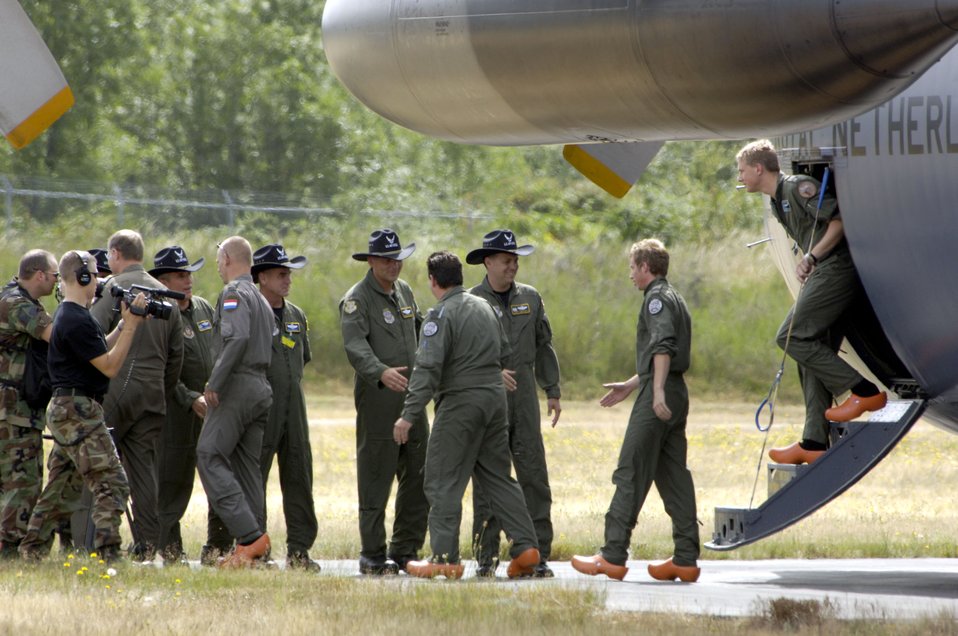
Rodeo 2007 officials welcome the team from the Netherlands' to McChord Air Force Base, Wash., July 16. Rodeo 2007, hosted by Air Mobility Command, is a readiness competition of U.S. and international mobility forces. It focuses on improving warfighting capabilities and support of the war on terrorism.